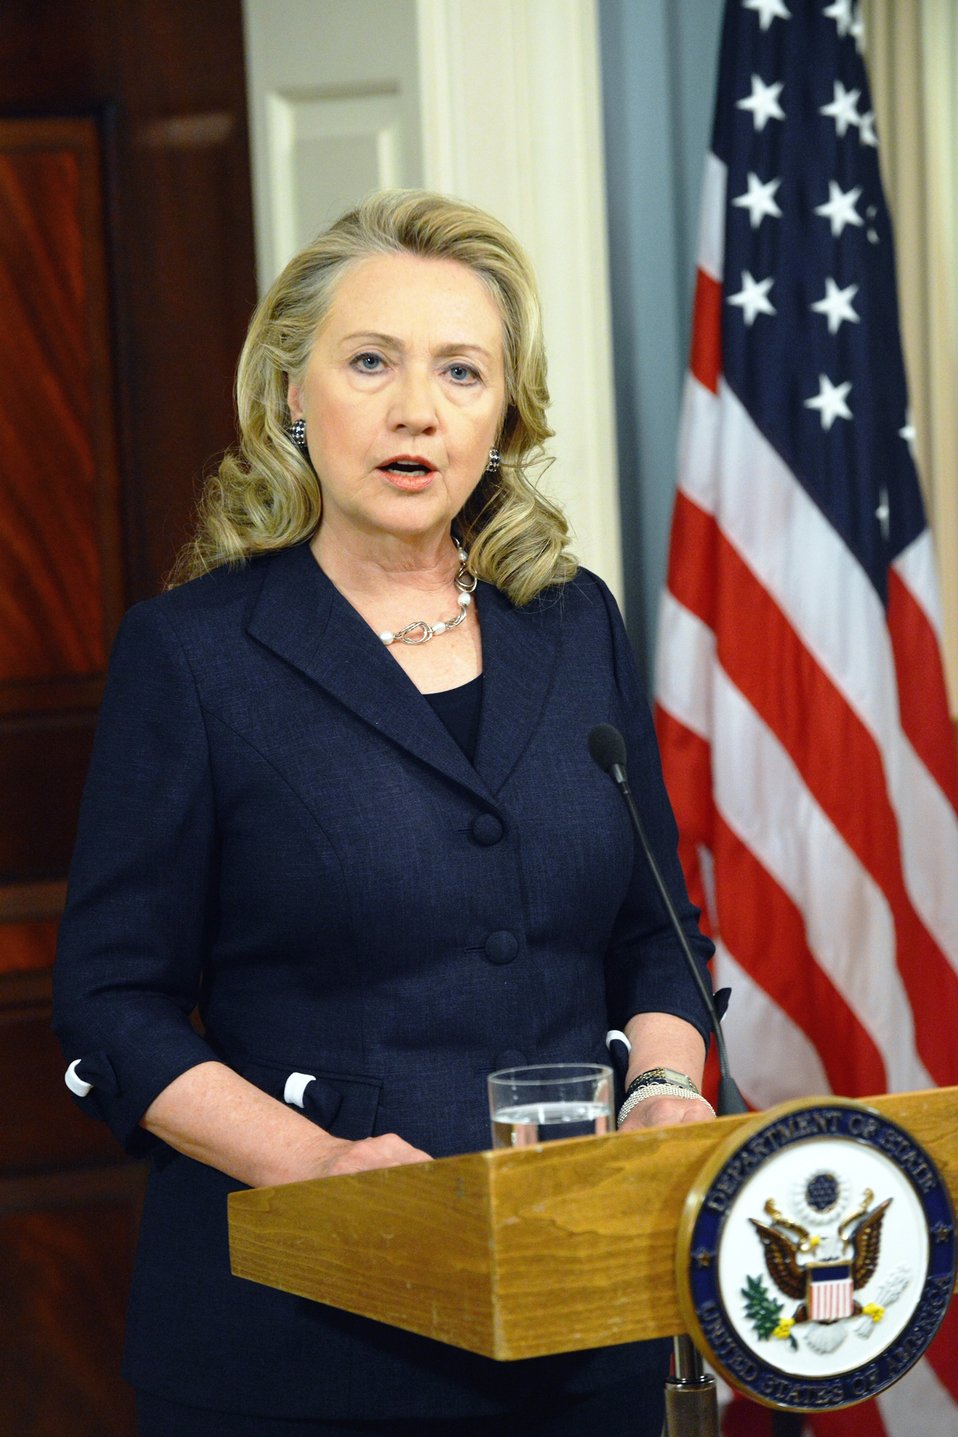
Secretary Clinton Delivers Remarks on the Deaths of American Personnel in Libya

U.S. Secretary of State Hillary Rodham Clinton delivers remarks on the deaths of American personnel in Benghazi, Libya, at the U.S. Department of State in Washington, D.C., September 12, 2012.